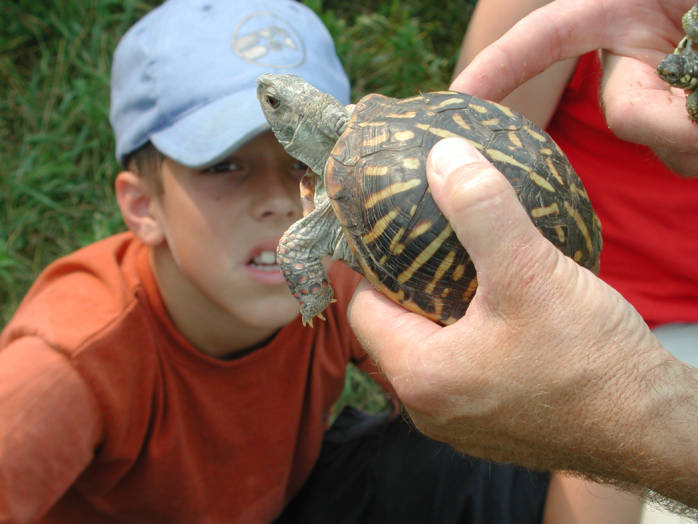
Cub scout with Eastern box turtle